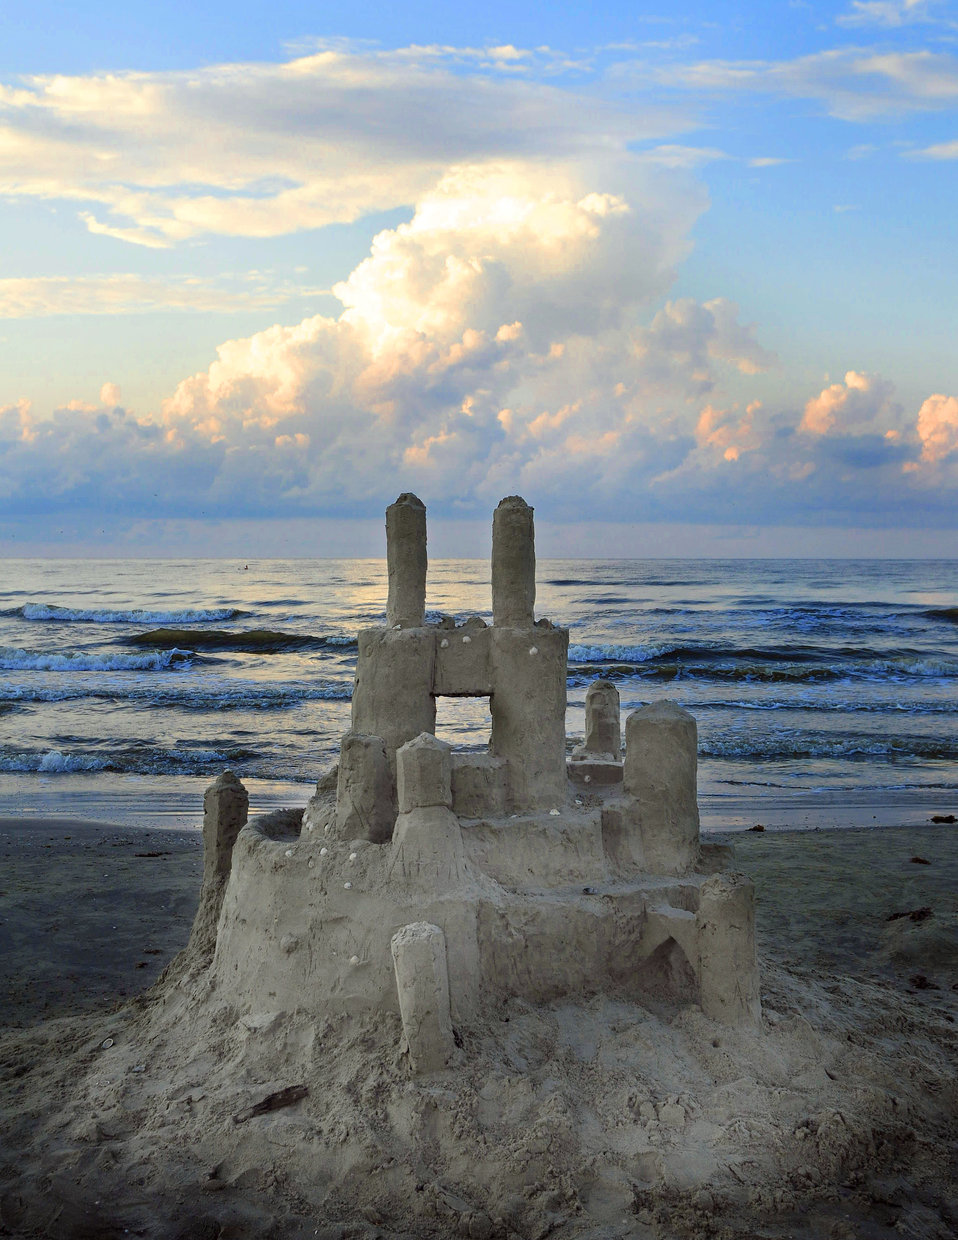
Galveston Island Park Beach Sand Castle